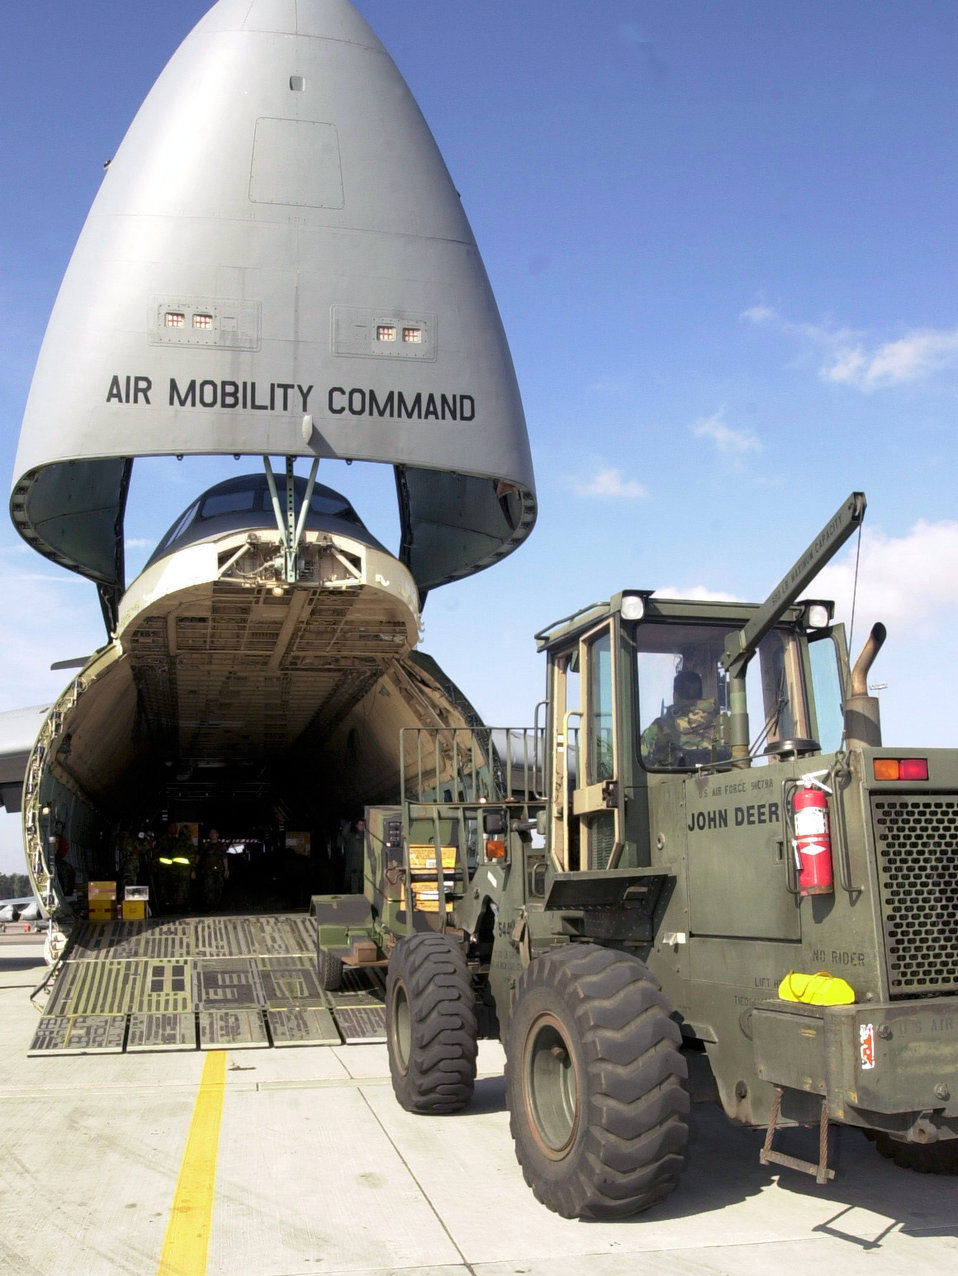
Loading a Galaxy

RAMSTEIN AIR BASE, Germany -- A fork lift moves cargo for loading on a C-5 Galaxy here.